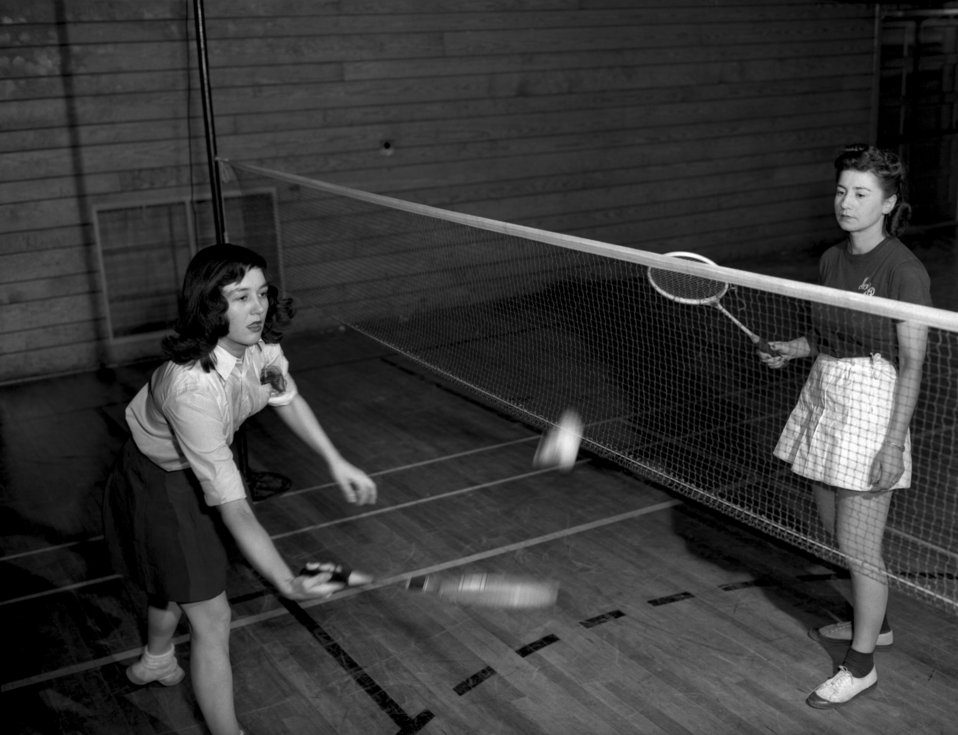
Mrs. M.D. Peterson Badminton Oak Ridge

3350-2 DOE photo Ed Westcott 3-19-1947 Oak Ridge Tennessee